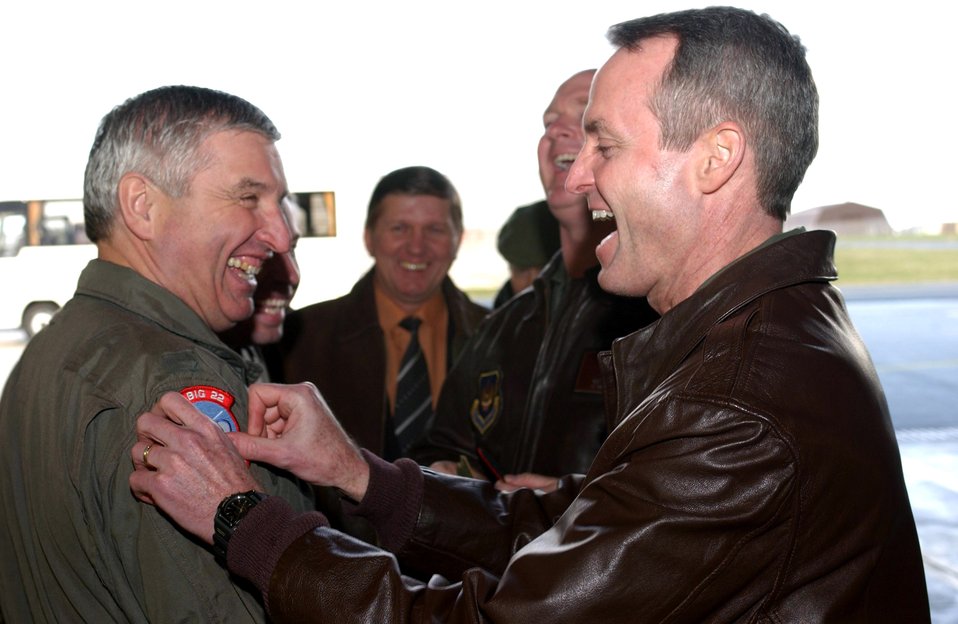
USAFE officials forge relations with Russian air force

Col. Darryl Roberson, 52nd Fighter Wing commander, pins a 22nd Fighter Squadron patch on distinguished visitor Russian Gen. Maj. Aleksandr Kharchevsky March 20 at Spangdahlem Air Base, Germany. It is the day before the general's incentive flight.